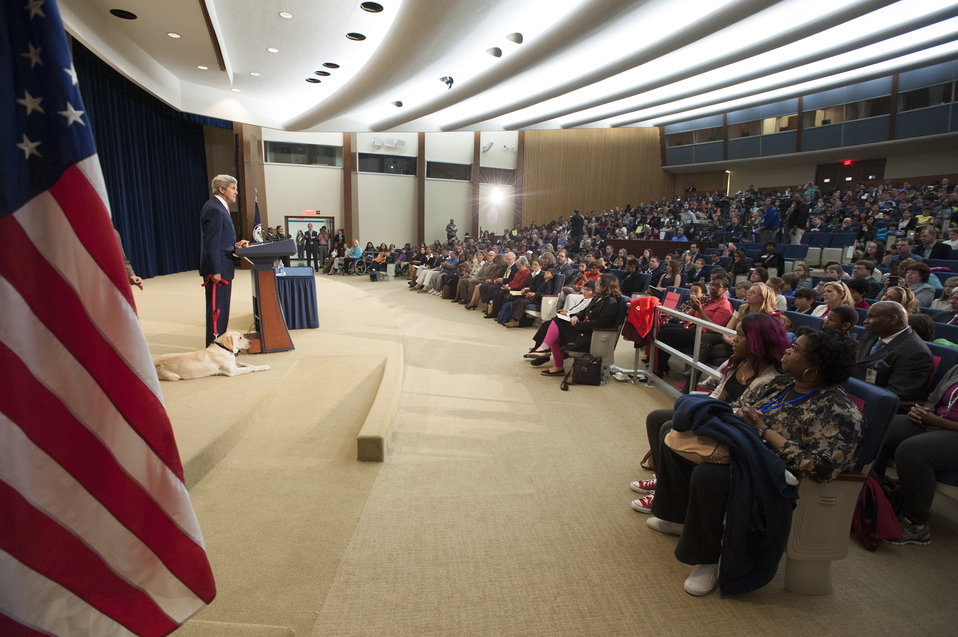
Secretary Kerry Delivers Remarks at the Take Your Child to Work Day Event

U.S. Secretary of State John Kerry, with his beloved dog Ben, speaks with children at the U.S. Department of State's annual Take Your Child to Work Day Event in Washington, D.C., on April 24, 2014.